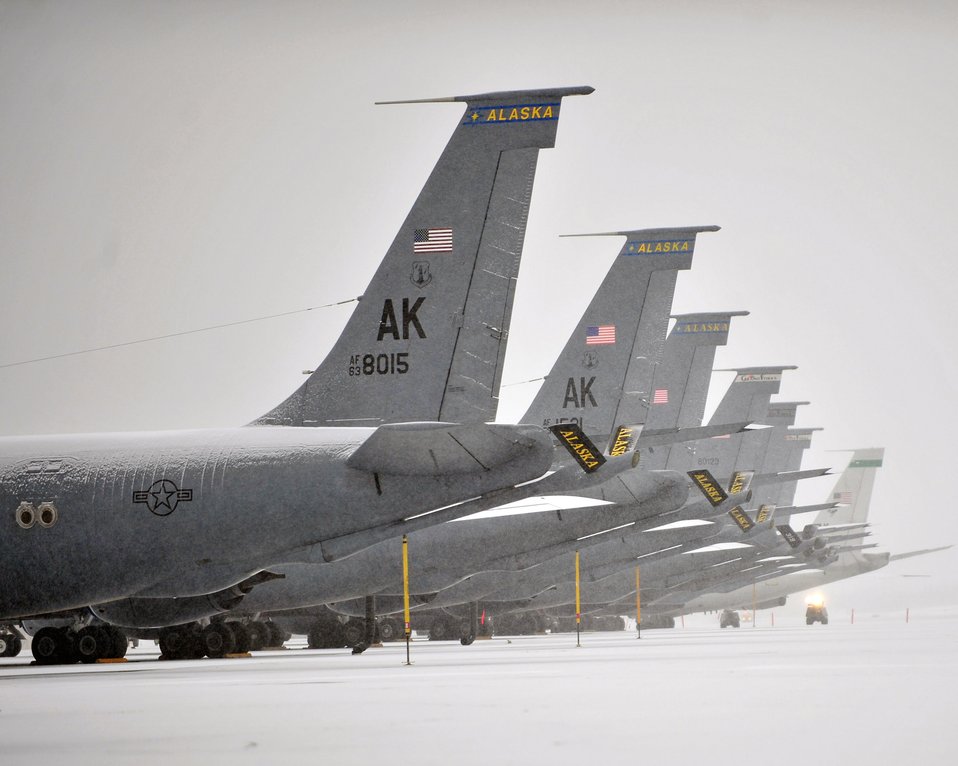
Wintery blast

On the flight line at Eielson Air Force Base, Alaska, KC-135 Stratotankers bear the brunt of a winter storm March 27 alongside Stratotankers from Grand Forks AFB, N.D. Airmen from Grand Forks are on temporary duty at Eielson.